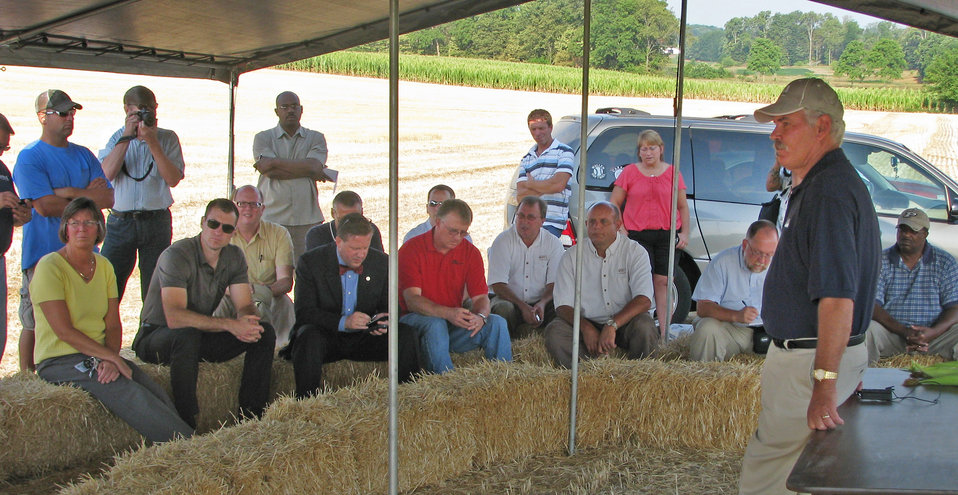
Agriculture Under Secretary for Farm and Foreign Agriculture Service (FFAS) Michael Scuse (right) speaks to the farmers about the drought conditions being felt across the country on the Shaefer Farm in Allen County, IN on Thursday, July 19, 2012. Agriculture Secretary Vilsack has instructed Agriculture subcabinet leaders to travel to affected drought areas to augment ongoing assistance from state-level U.S. Department of Agriculture (USDA) staff and provide guidance on USDA’s new, streamlined disaster process. The U.S. Drought Monitor currently reports that 61 percent of the continental United States is in a moderate to exceptional drought.